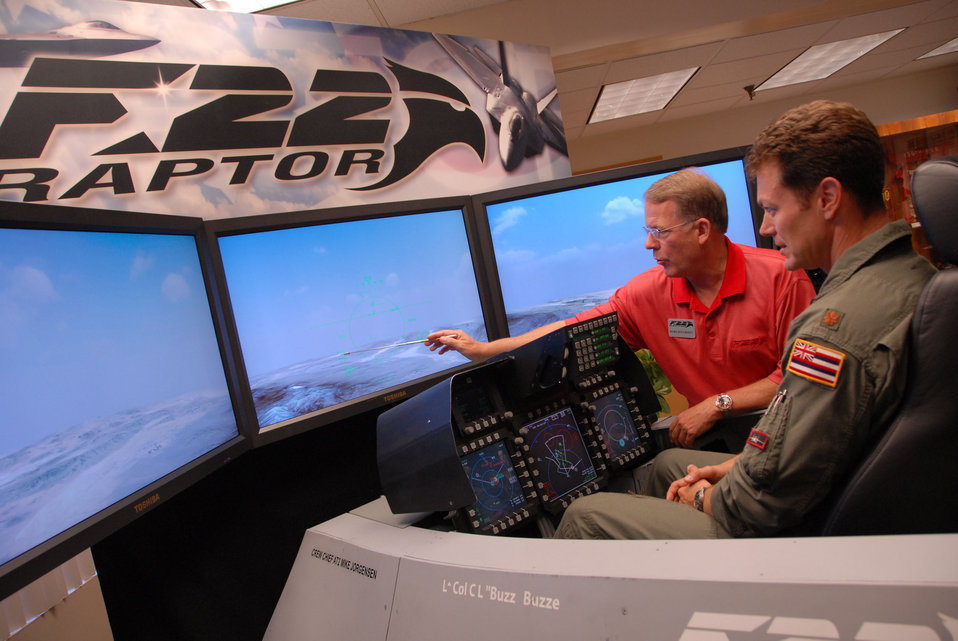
The sky's the limit

Mark Dougherty, from Lockheed Martin Aeronautics Co., demonstrates the F-22 Raptor flight simulator to Maj. James Sage, an F-15 Eagle pilot. Major Sage is assigned to the Hawaii Air National Guard's 199th Fighter Squadron at Hickam Air Force Base.